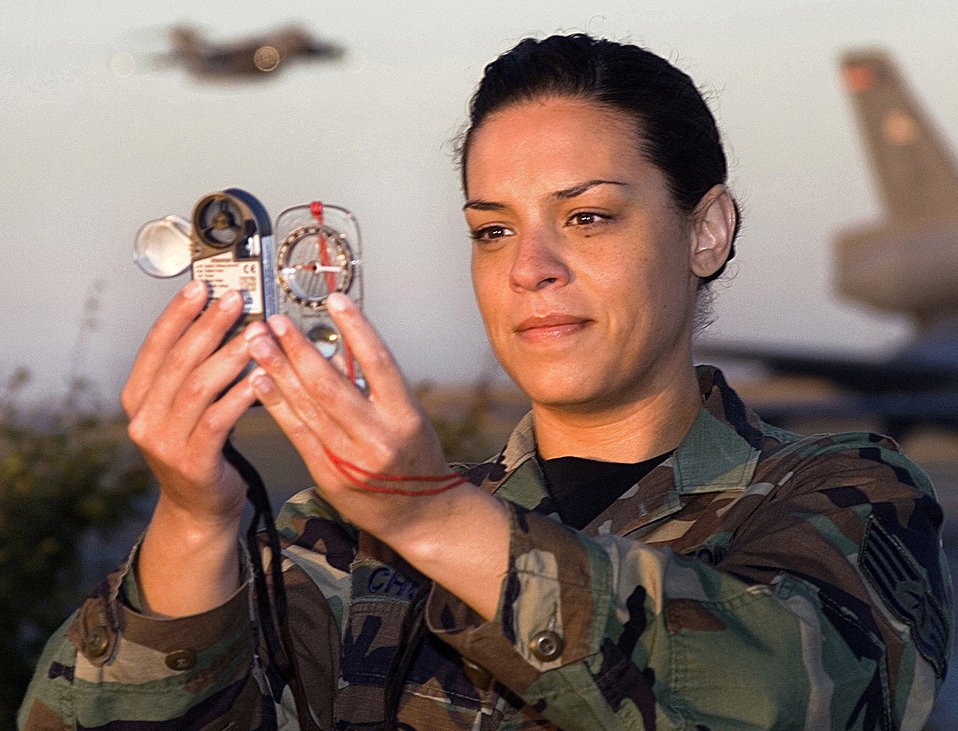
It's a good flying day

Using a portable wind meter, Staff Sgt. Rebecca Church takes a reading at Travis Air Force Base, Calif. The instrument measures wind speed, temperature and atmospheric pressure. Sergeant Church is a combat weather forecaster for the 60th Operations Support Squadron.